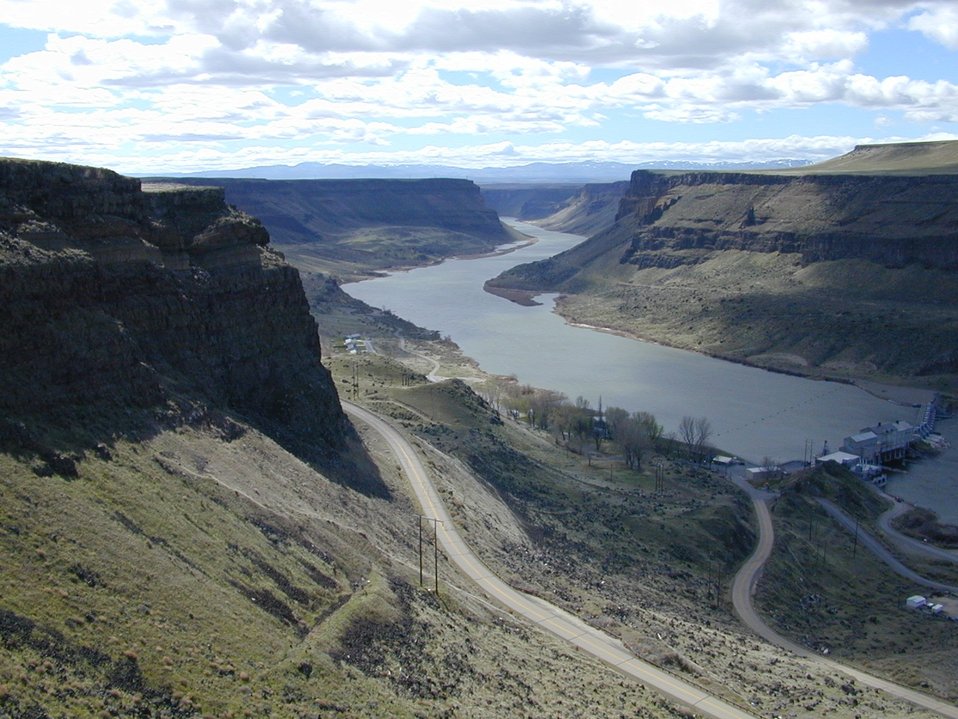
Scenic Snake River Birds of Prey National Conservation Area Lower Snake River District LSRD Snake River Canyon